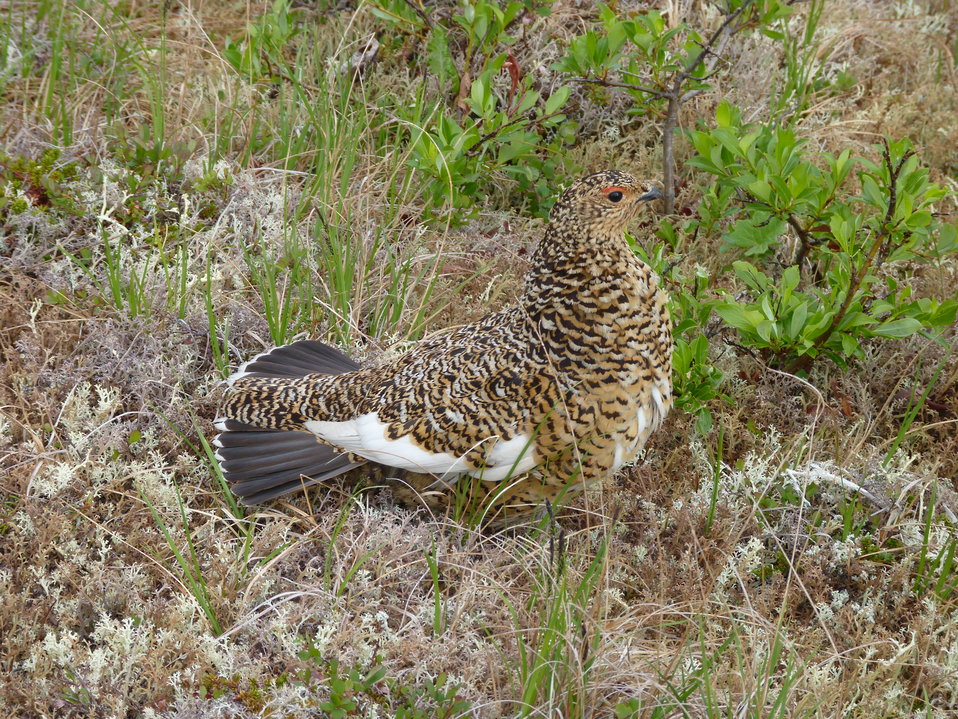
Willow Ptarmigan female

Andreafsky wilderness, Yukon Delta National Wildlife Refuge